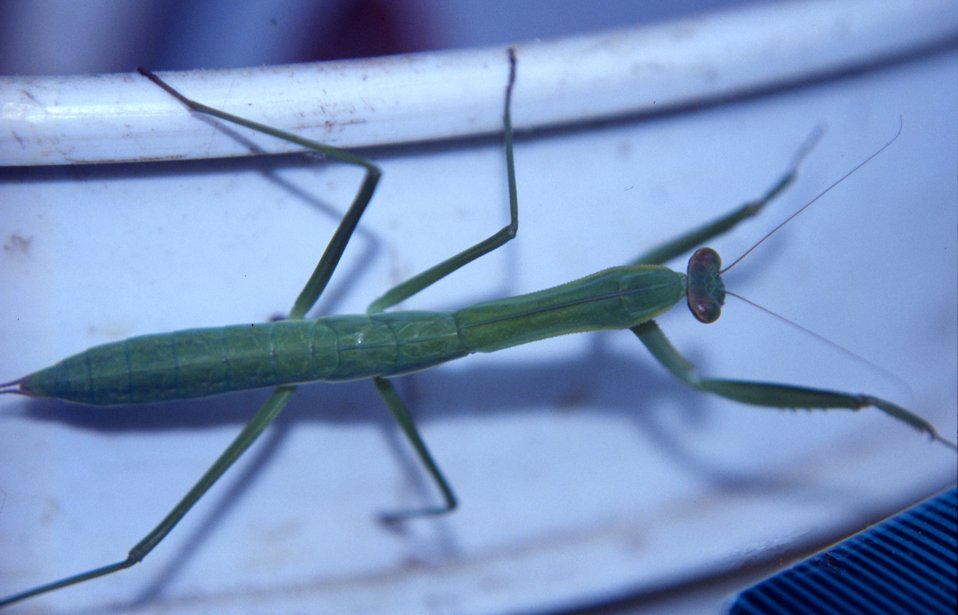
Praying mantis, Stagmomantis carolina (Johannson).